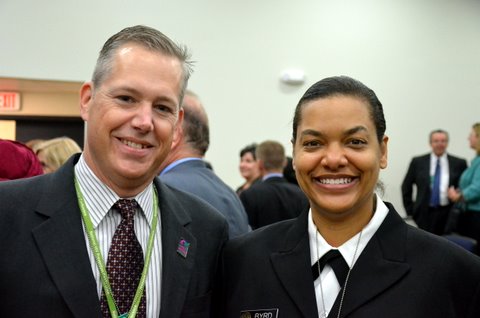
WH 2012 World Hepatitis Day Event